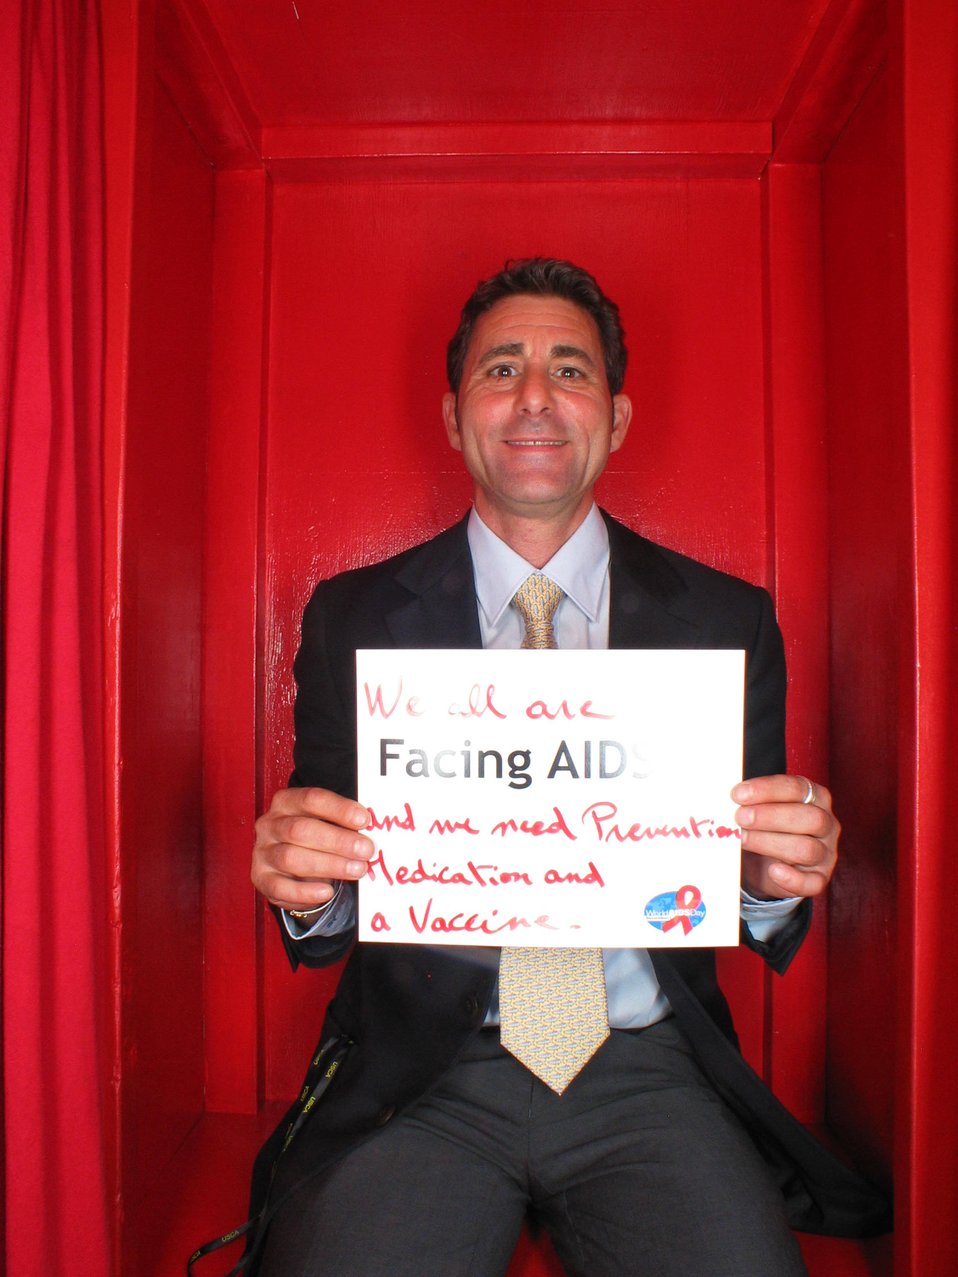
We are all Facing AIDS because we need prevention, medication and a vaccine